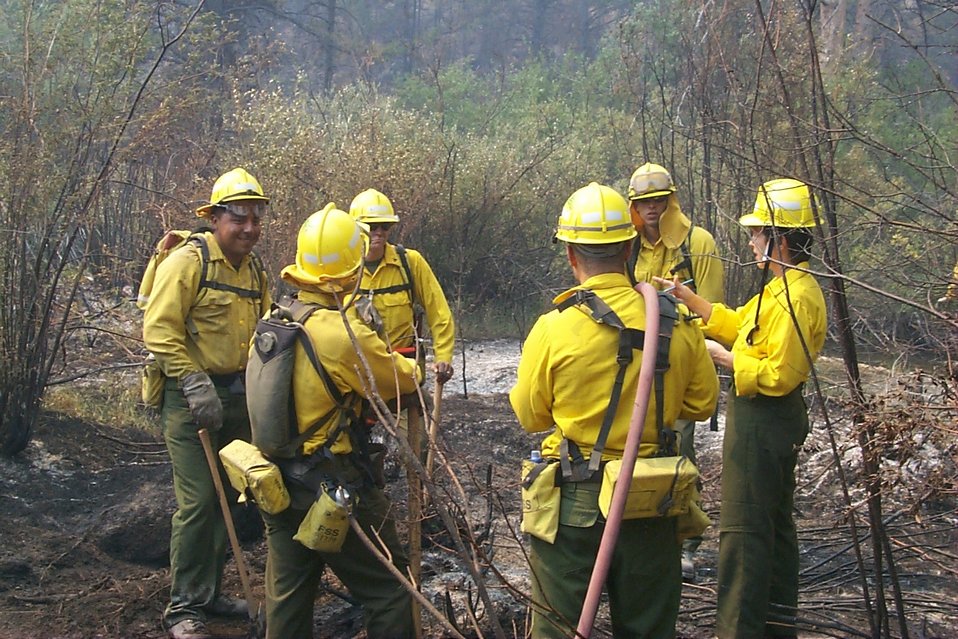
Fire crew meeting Fire Clearwater Fire Salmon Field Office USRD Upper Snake River District